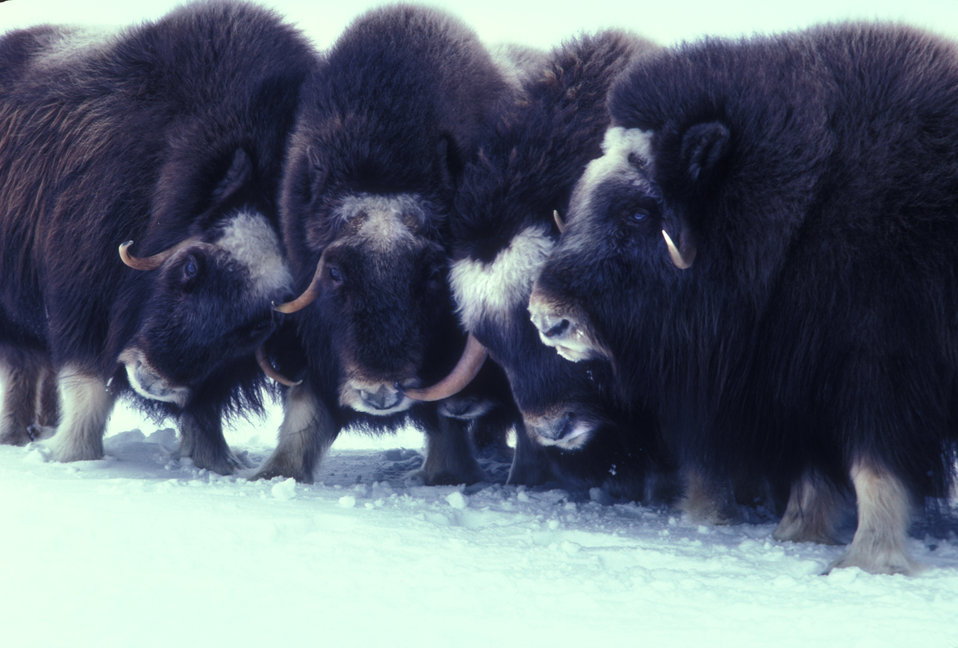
Muskox In Alaska (1978)

This Arctic mammal is believed to be a survivor or the Pleistocene period and to have migrated to North America between 200,000 and 90,000 years ago. They graze on grasses, reeds, sedges and other ground plants. In the winter they dig through the snow cover to find food.
These social animals live in small herds of 10 to 20 animals. When threatened they form a defensive perimiter, tail to tail, with their heads facing out in a stationary ring around their calves.

Photo Credit: USFWS
Photo Taken 1978